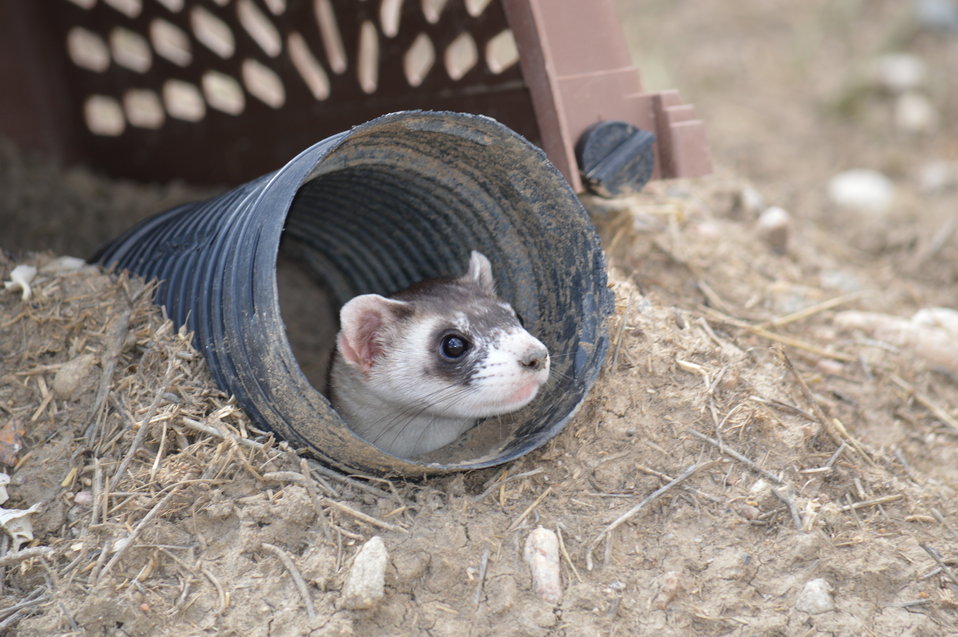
Interns visit the NBFFCC

In the summer of 2012, USFWS Region 6 interns visited the National Black-footed Ferret Conservation Center (NBFFCC) in Colorado to learn how the program reintroduces the endangered Black-footed ferret back into its native habitat.